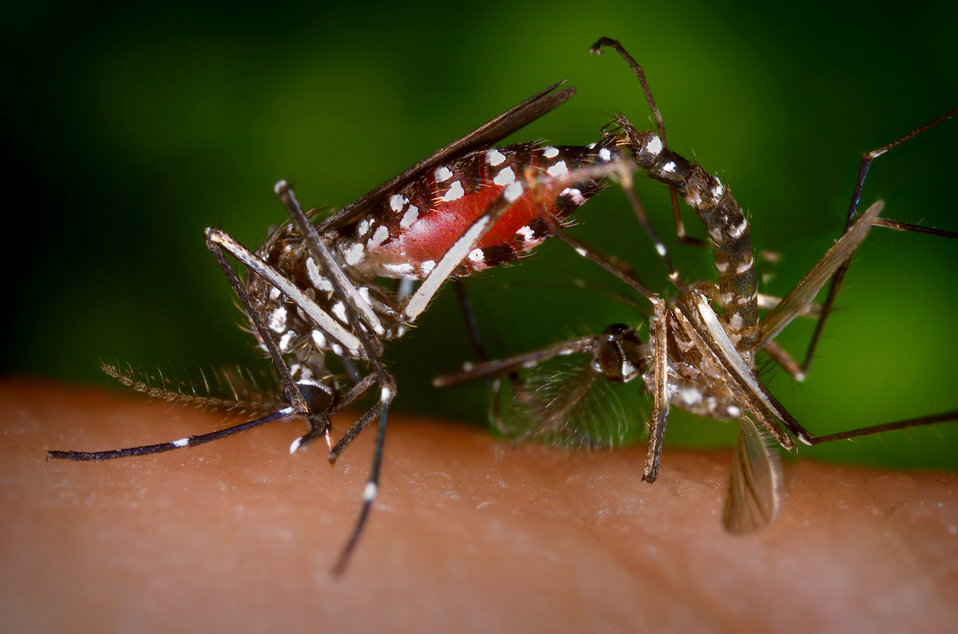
This image depicts a pair of Aedes albopictus mosquitoes during a mating ritual while the female feeds on a blood meal.